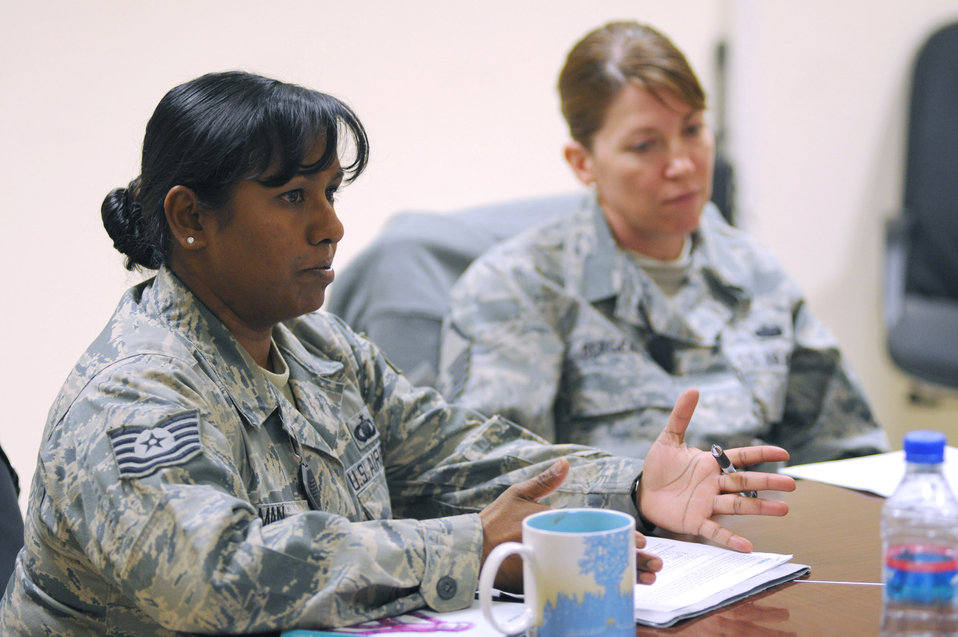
Blessed chaplain assistant finds peace in helping others

Tech. Sgt. Elizabeth R. L. Man facilitates conversation during a bible study Dec. 17, 2010, at Kandahar Airfield, Afghanistan. As a chaplain's assistant, she helps provide administrative, religious and program support for chaplains. Sergeant Man is assigned to Lackland Air Force Base, Texas, and is deployed to the 451st Air Expeditionary Wing.